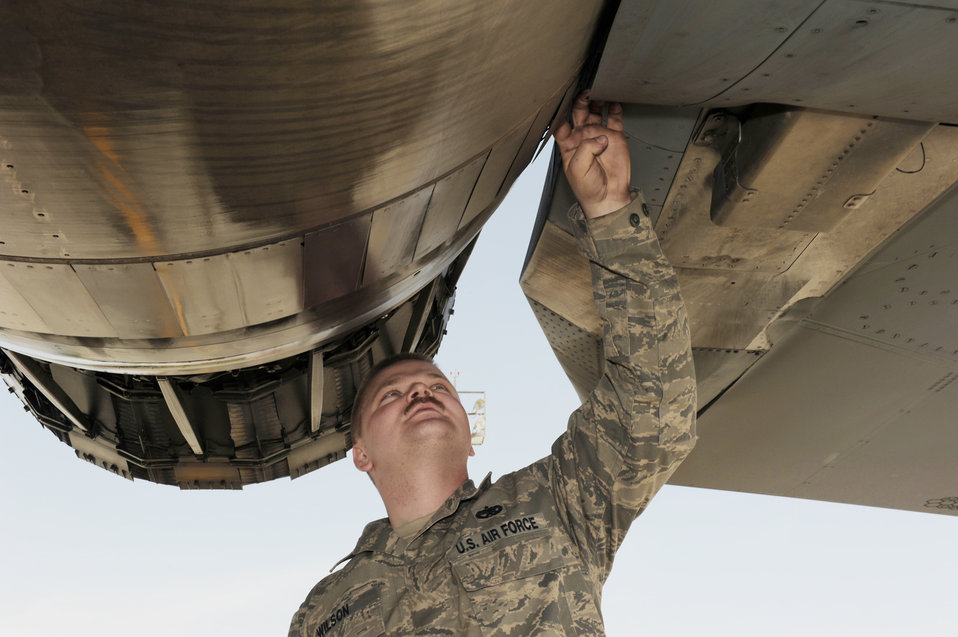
Airman's vigilance prevents aircraft mishap

Staff Sgt. Justin Wilson performs a walk around inspection of an F-15E Strike Eagle March 16, 2010, at Bagram Airfield, Afghanistan. Sergeant Wilson is a 494th Aircraft Maintenance Unit crew chief deployed from Royal Air Force Lakenheath, England, and is a native of Malone, N.Y.